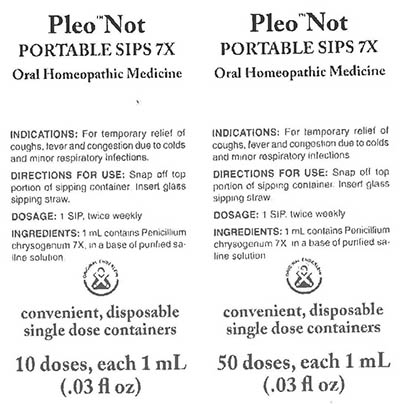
RECALLED – Homeopathic Drug Products

March 18, 2014 – Product Recall – Terra-Medica Issues Voluntary Nationwide Recall of Specified Lots of Pleo Homeopathic Drug Products Due to the Potential for Undeclared Penicillin.